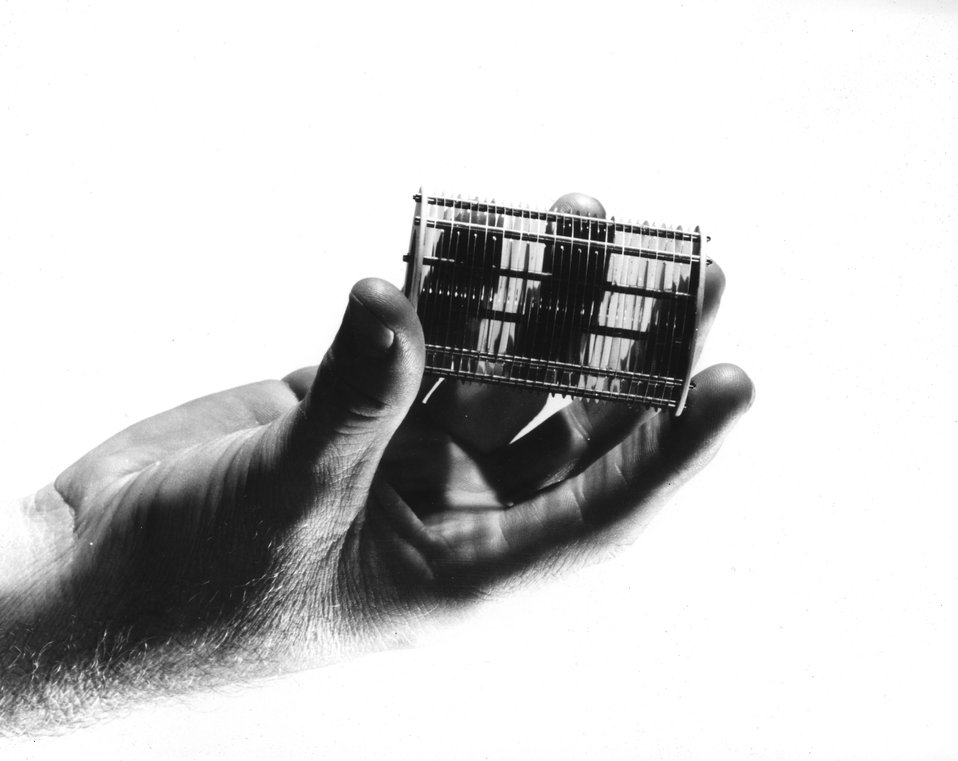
Model of a highly sensitive neutron detector developed at the Atomic Energy Commission's Oak Ridge National Laboratory as part of the Liquid Metal Fast Breeder Reactor research program. c. 1972